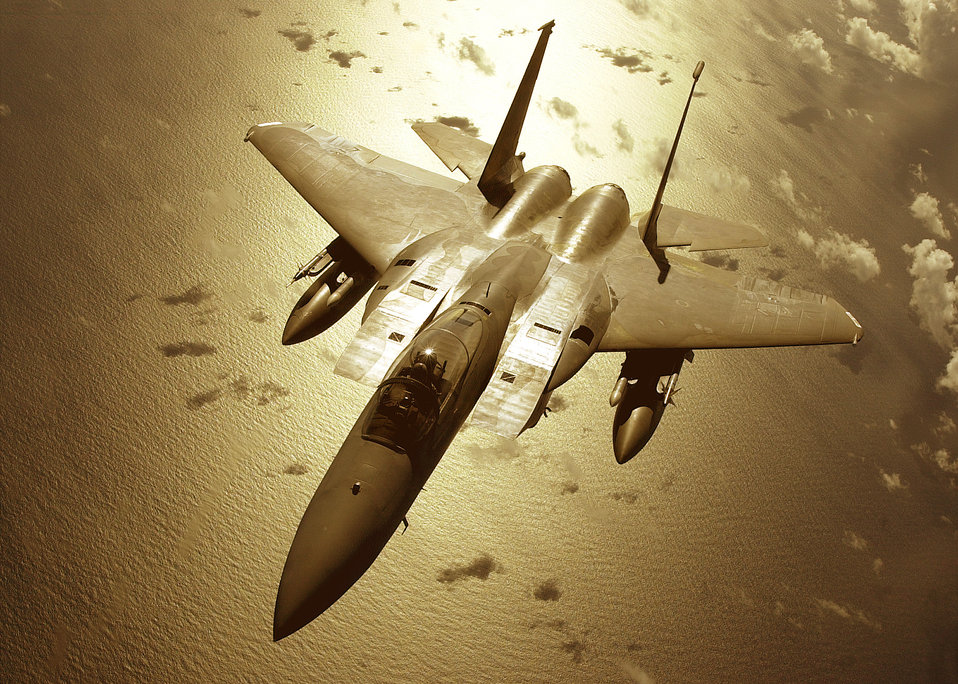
Golden fighter

OVER THE PACIFIC OCEAN -- An F-15C from the 67th Fighter Squadron prepares to refuel in flight from a KC-135R, from the 909th Air Refueling Squadron, June 28, 2001, while on a routine training mission over the Pacific ocean. Both units are stationed at Kadena Air Base, Japan.